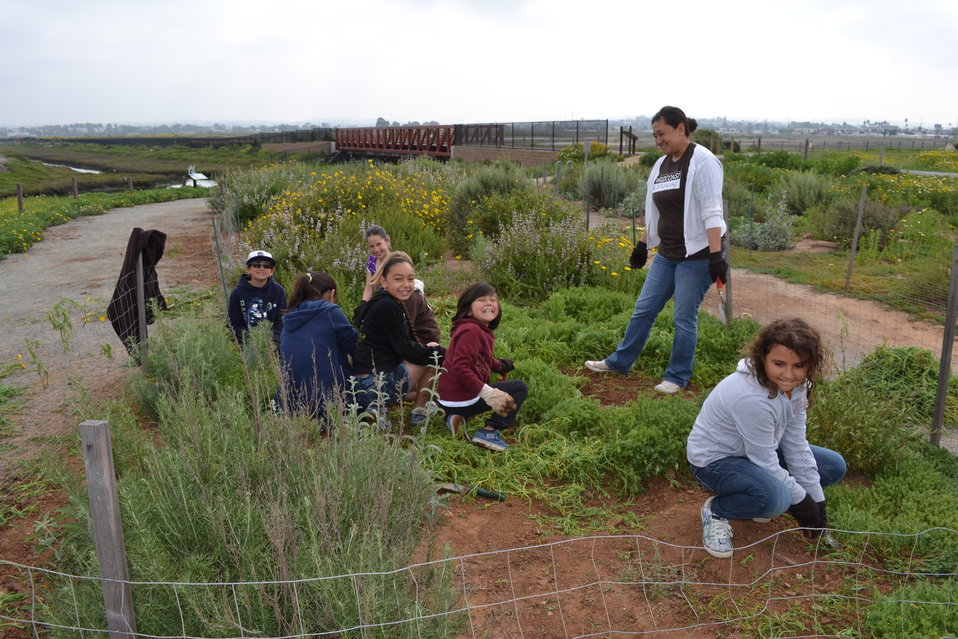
Habitat Heroes to the Rescue!

Students from neighbor school, Imperial Beach Elementary, participate in habitat stewardship by pulling invasive iceplant